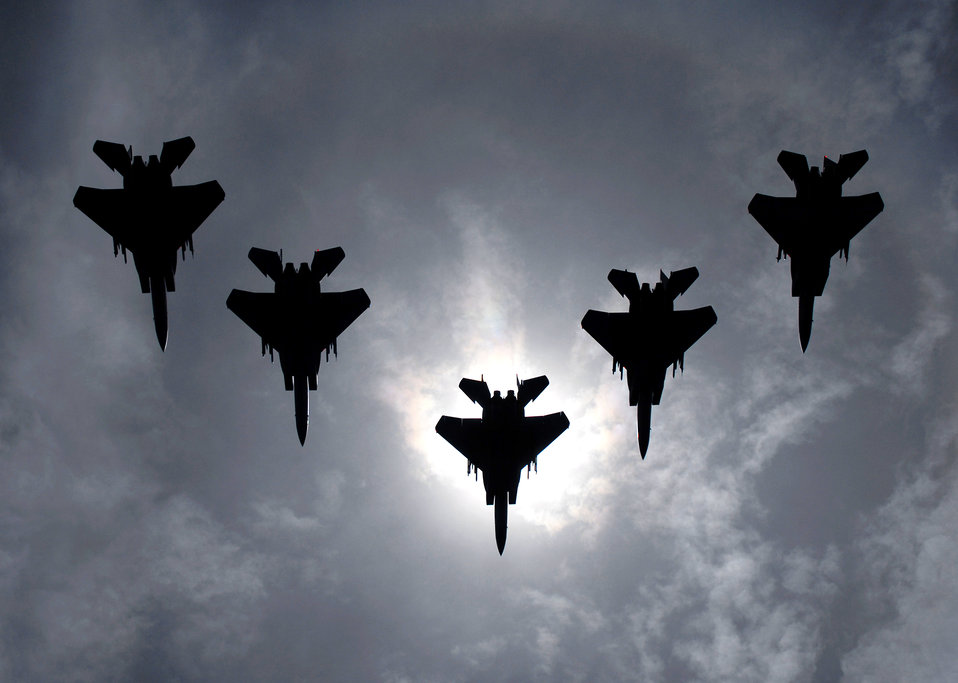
Total eclipse of the sun

A flight of F-15C Eagles from the 44th Fighter Squadron, Kadena Air Base, Japan, flies during a solar eclipse July 22 over the island of Okinawa. The eclipse was a rare opportunity for servicemembers here to witness this rare event.